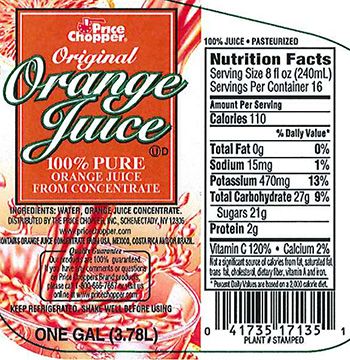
RECALLED – Orange Juice

March 3, 2014 – Product Recall – Lehigh Valley Dairy Conducts Voluntary Recall of Lehigh Valley, Swiss Premium, and Price Chopper Brand Orange Juice Because It May Contain Undeclared Allergen (Milk).